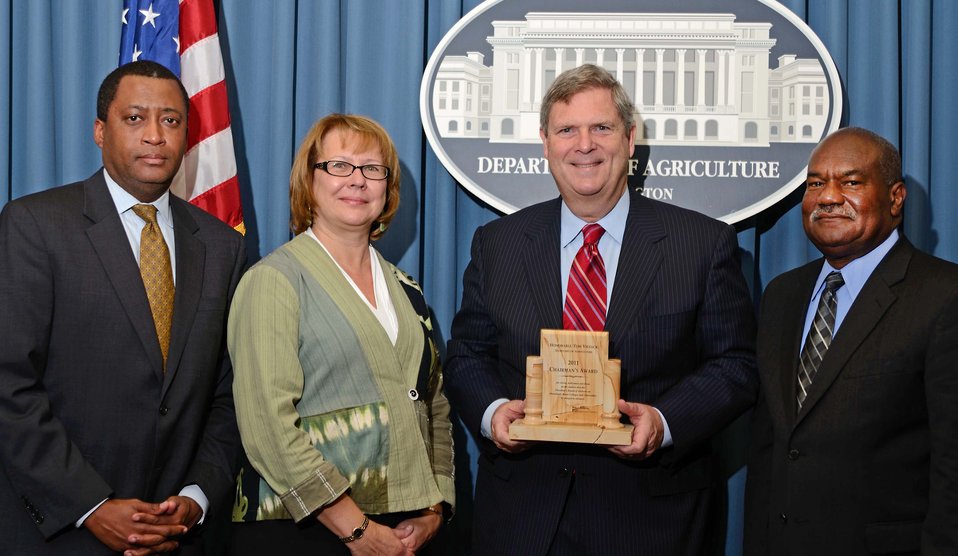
Left to right, Dr. Joe Leonard, Assistant Secretary for Civil Rights, Ann Bartuska, Deputy Under Secretary for Research, Education and Economics, Agriculture Secretary Tom Vilsack, and Pearlie Reed, Assistant Secretary for Departmental Management. Secretary Vilsack is holding the 2011 Chairman’s Award for vision, dedication and focus on the matters that the President’s Board of Advisors on Historically Black Colleges and Universities is charged to advance. He received the award at the U.S. Department of Agriculture in Washington, D.C. on Wednesday, October 19, 2011.